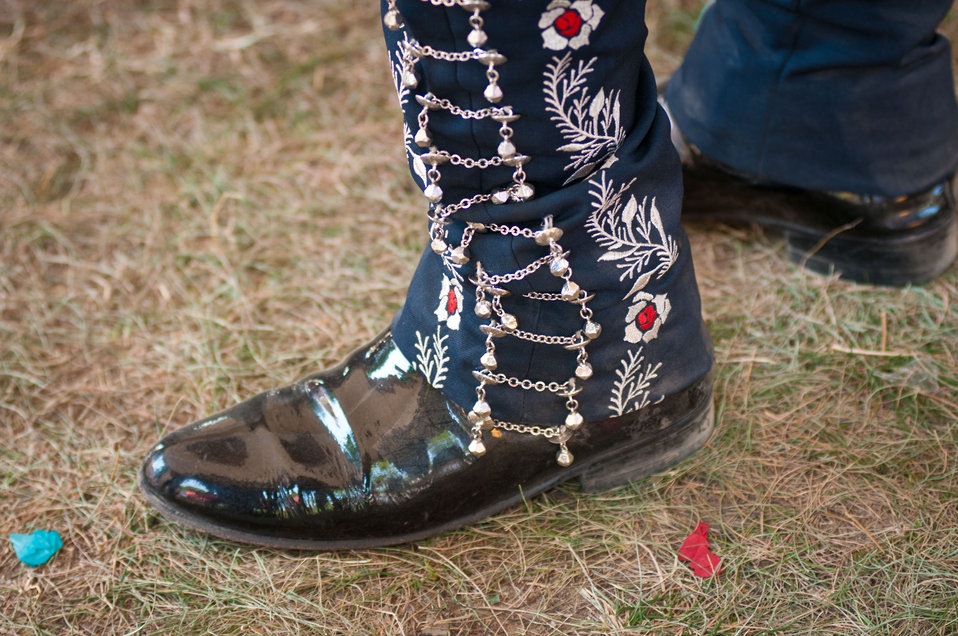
Decorated boots and pants on a Mariachi band performer at the 2012 Smithsonian Folklife Festival, on the National mall in Washington, D.C., on Wednesday, June 27, 2012. One of the three themes this year is “Campus and Community.” It celebrates the 150 years of the USDA and the Land-Grant University System. The U.S. Department of Agriculture (USDA) and the Land-Grant system extend education across the country, contributing to American agriculture success and rural prosperity. “Campus and Community” has demonstrations, discussions, hands-on activities, and entertainment to that showcase the many ways that this partnership works to improve American agriculture and rural life.